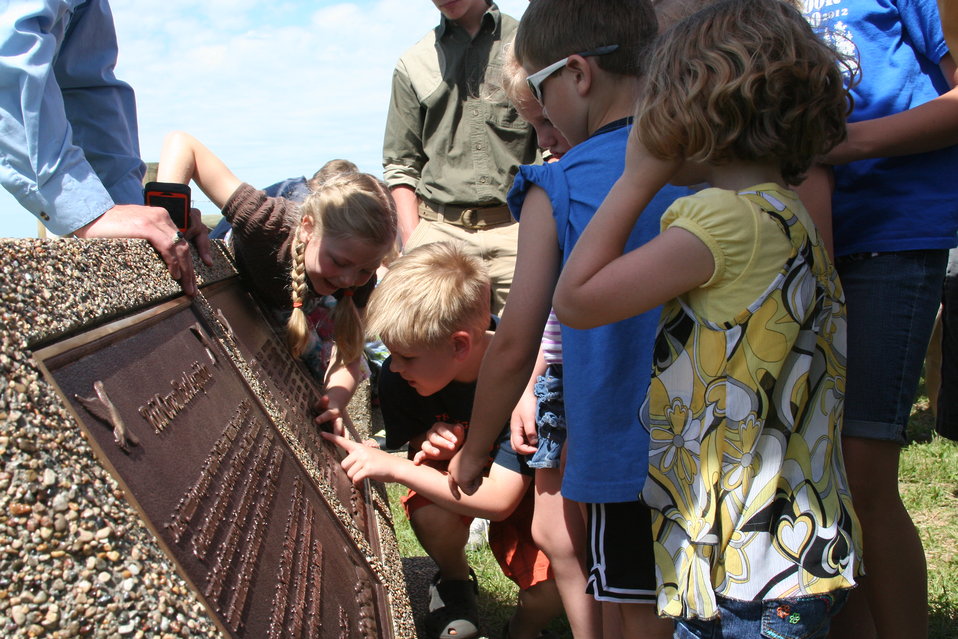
2013 Green Wing Dedication

Dedication Visitors observing new placed markers.